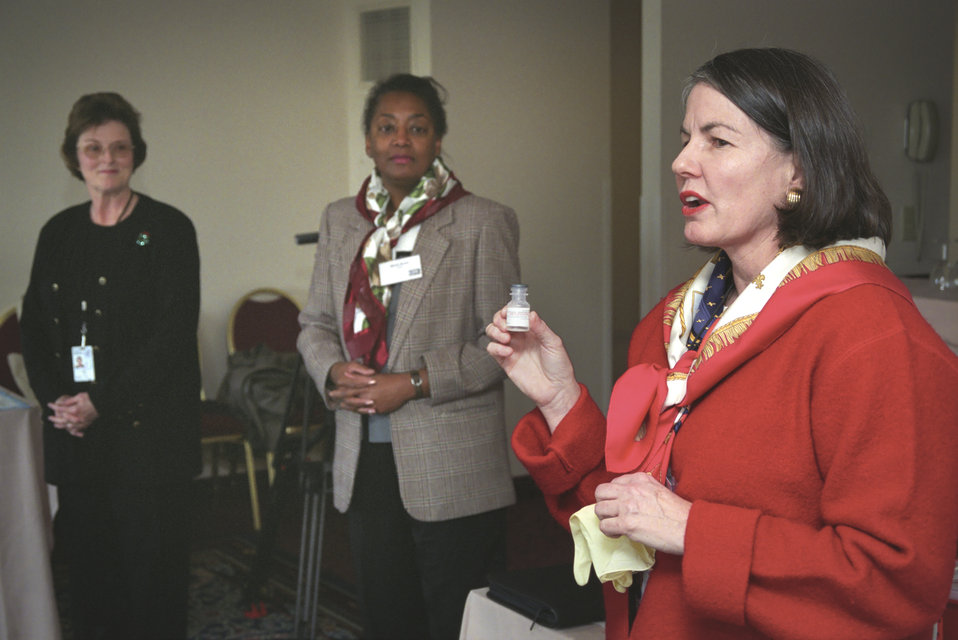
CDC clinician, Melanie King, RN, explains the use of saline solution during the 2002 Smallpox Vaccinator Workshop.